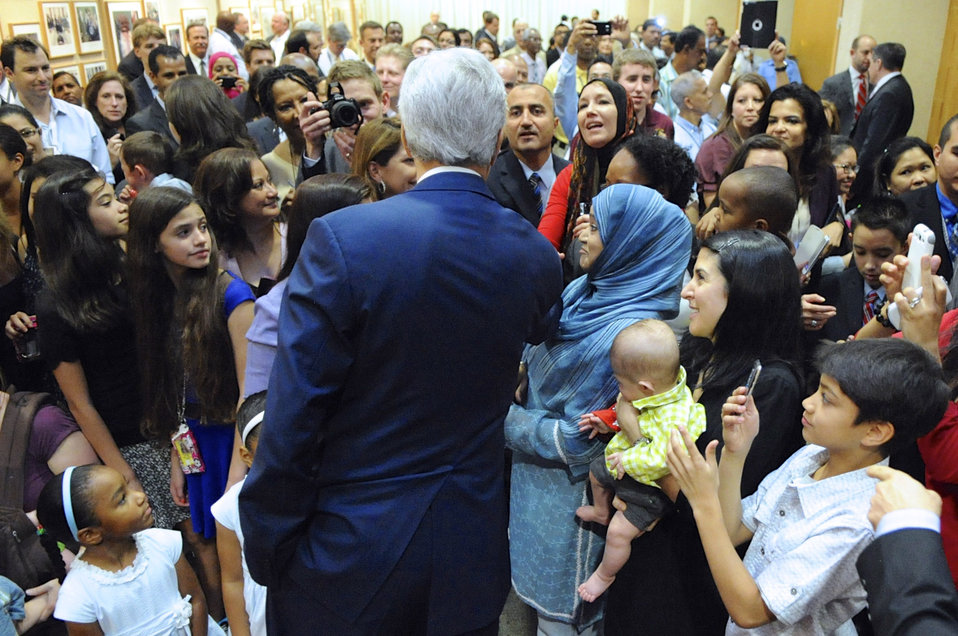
Secretary Kerry Greets Embassy Riyadh Staff and Families

U.S. Secretary of State John Kerry greets members of the Embassy Riyadh staff after addressing them during a visit to Saudi Arabia on November 4, 2013.